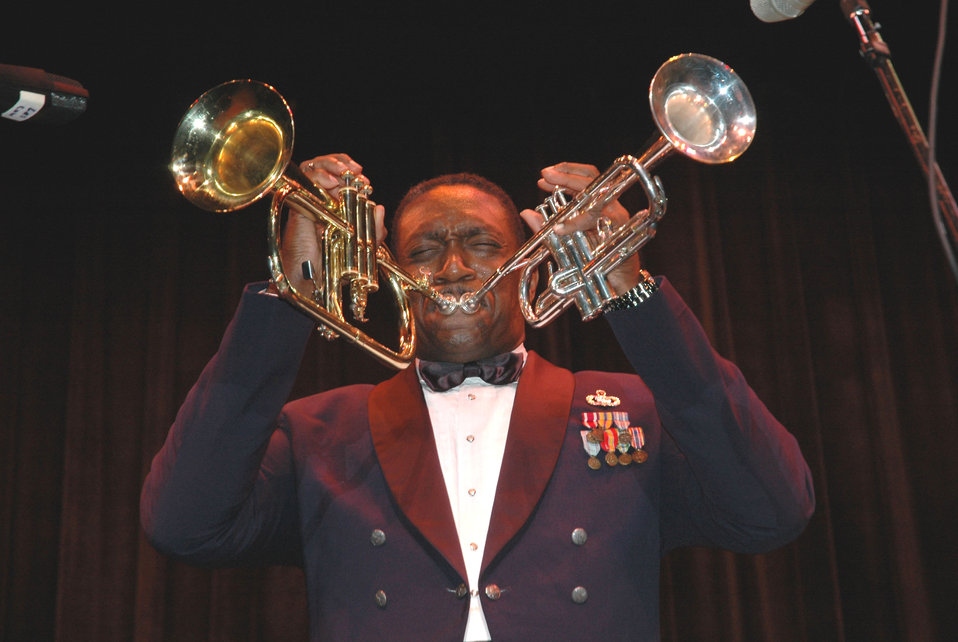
Dueling horns

Master Sgt. Ken Trimmins performs at Delaware State University in Dover, Del., as part of the 512th Airlift Wing Band's